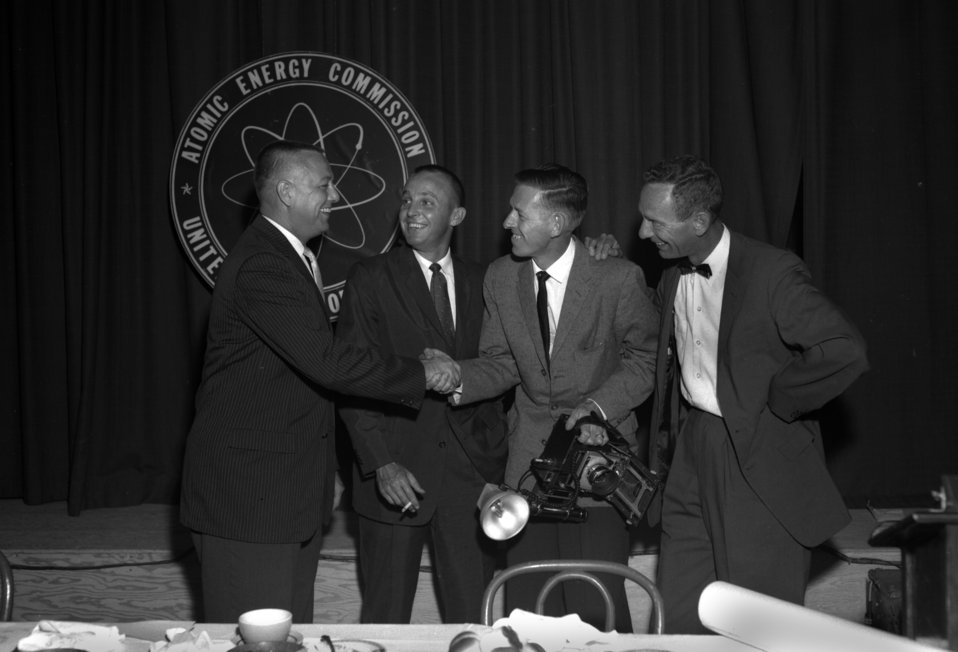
Suggestion Award winner Westcott Oak Ridge

60-0753 DOE photo by T.R. Cook

Suggestion Award winner Westcott with PIO Staff left to right Harris, Range, Westcott, StokelyOak Ridge Tennessee 8/4/1960